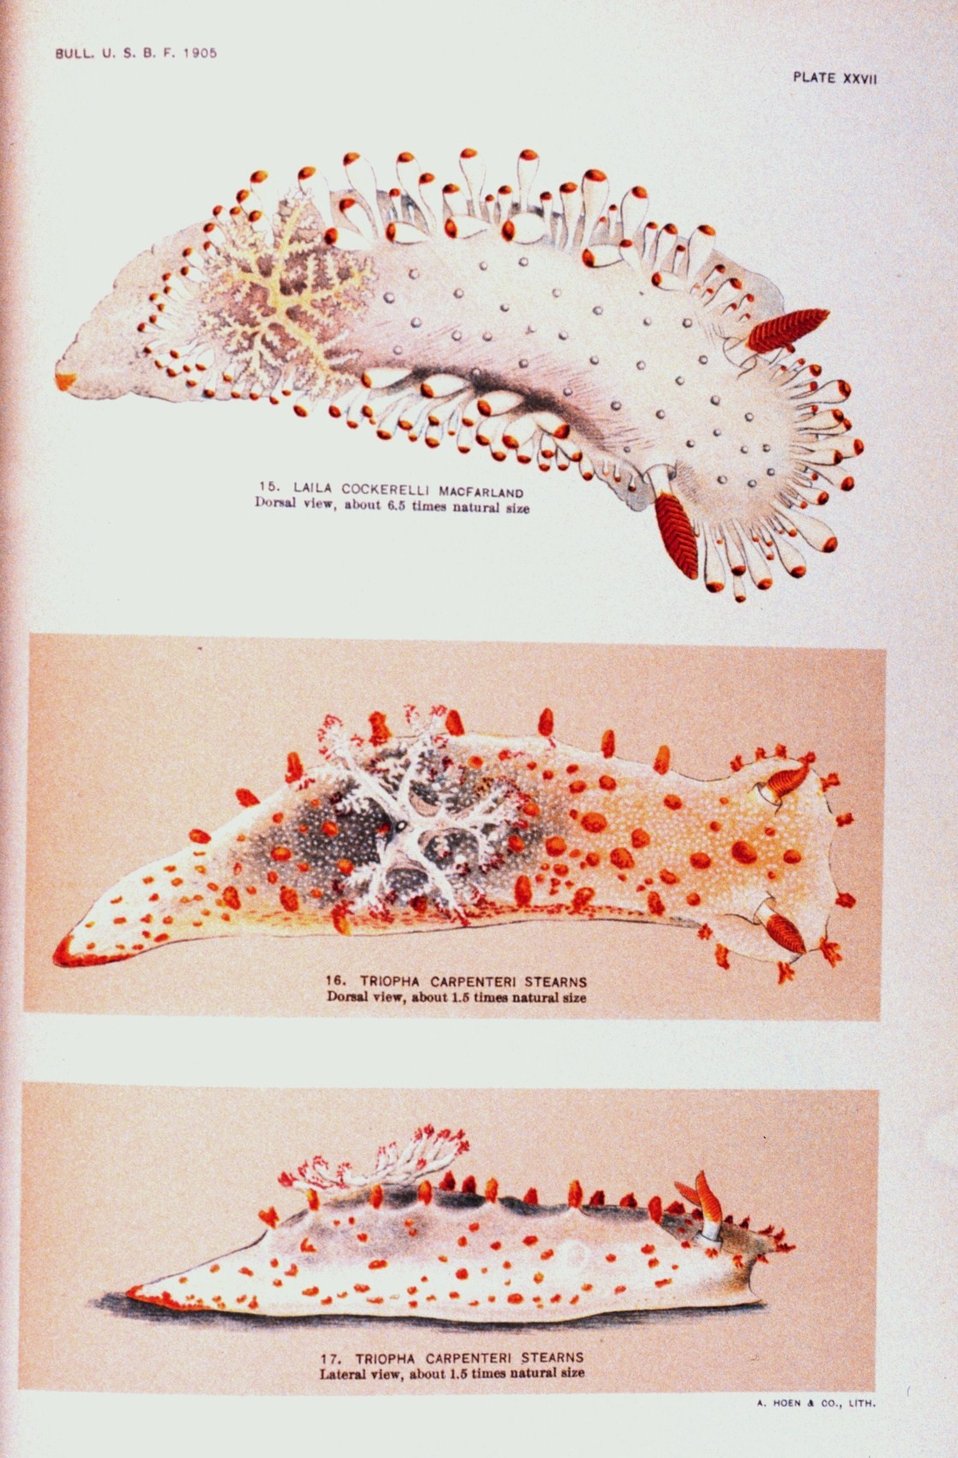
Nudibranchs. 15. Laila cockerelli MacFarland - Dorsal view. 16, 17. Triopha carpenteri Stearns - Dorsal view and lateral view. Views painted by Anna B. Nash of the Hopkins Seaside Laboratory. In: 'Opisthobranchiate Mollusca from Monterey Bay ....', Bulletin of the Bureau of Fisheries, Volume 25, 1905. P. 151, Plate XXVII.